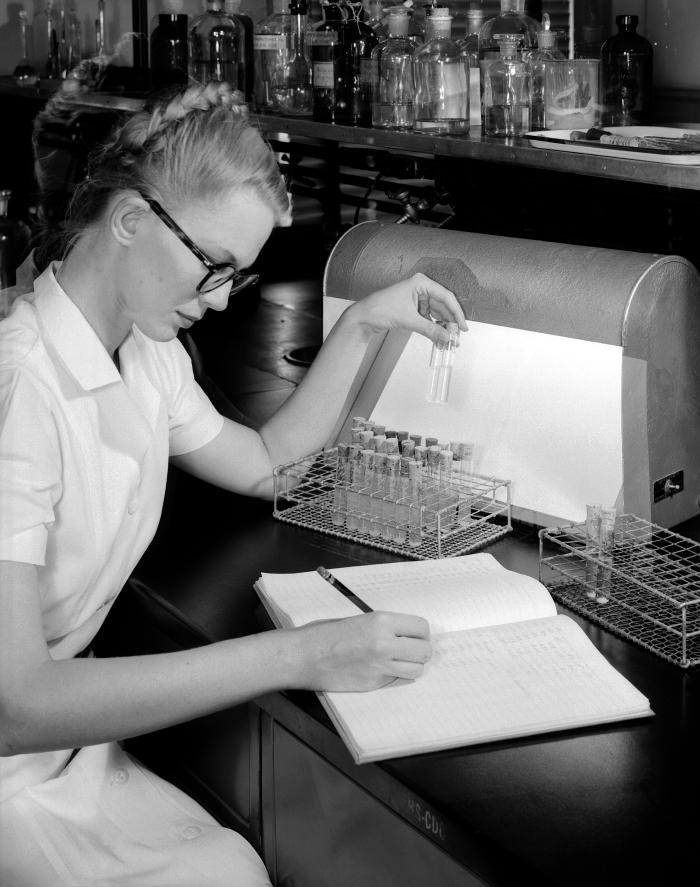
This historic image depicted a laboratorian as she was performing a cephalin-cholesterol flocculation test in the hepatology laboratory. This test nonspecifically measures blood globulins, which are a group of proteins produced either by the liver, or the immune system.